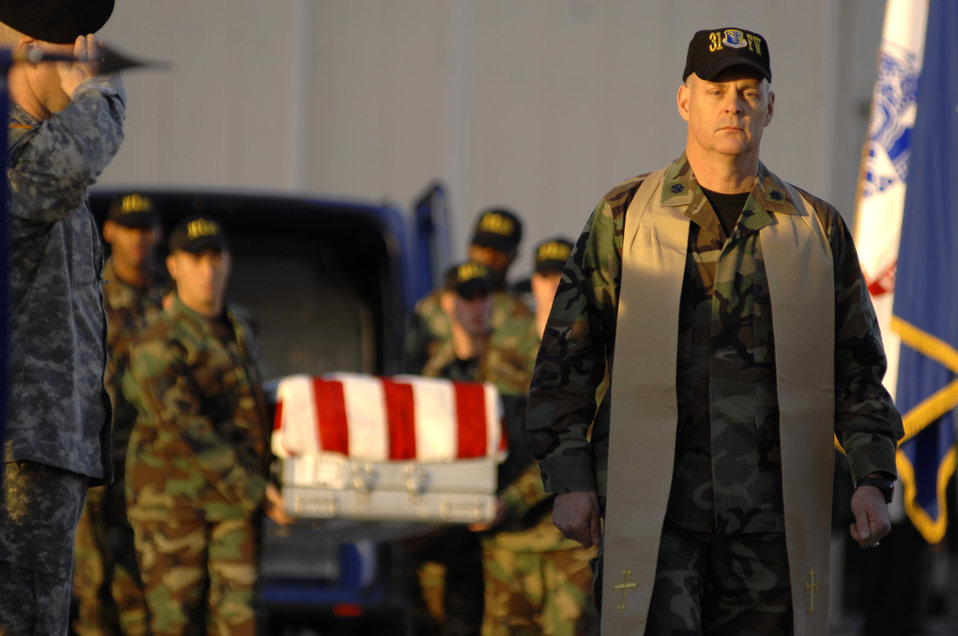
Fallen Airmen, Soldiers honored at Aviano

Chaplain (Lt. Col.) Jimmy Browning leads a fallen Airman onto a C-130 Hercules during a repatriation ceremony Nov. 13 at Aviano Air Base, Italy, for six servicemembers who were killed when an Army UH-60 Black Hawk helicopter attached to the 1st Battalion, 214th Aviation Regiment crashed Nov. 8, 22 miles southwest of Aviano. Chaplain Browning is from the 31st Fighter Wing.